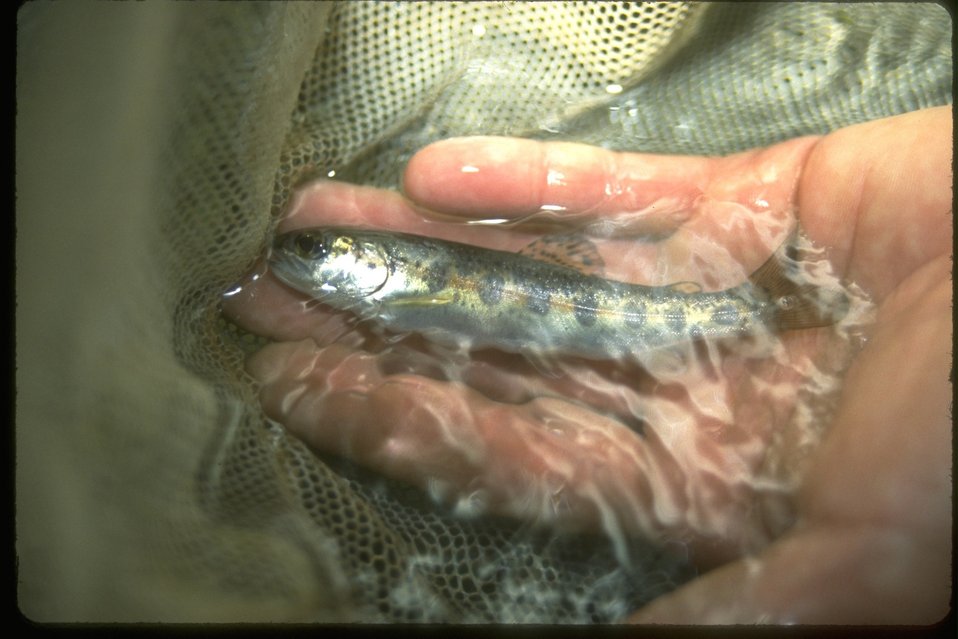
A Steelhead Fingerling resting in a hand with water.